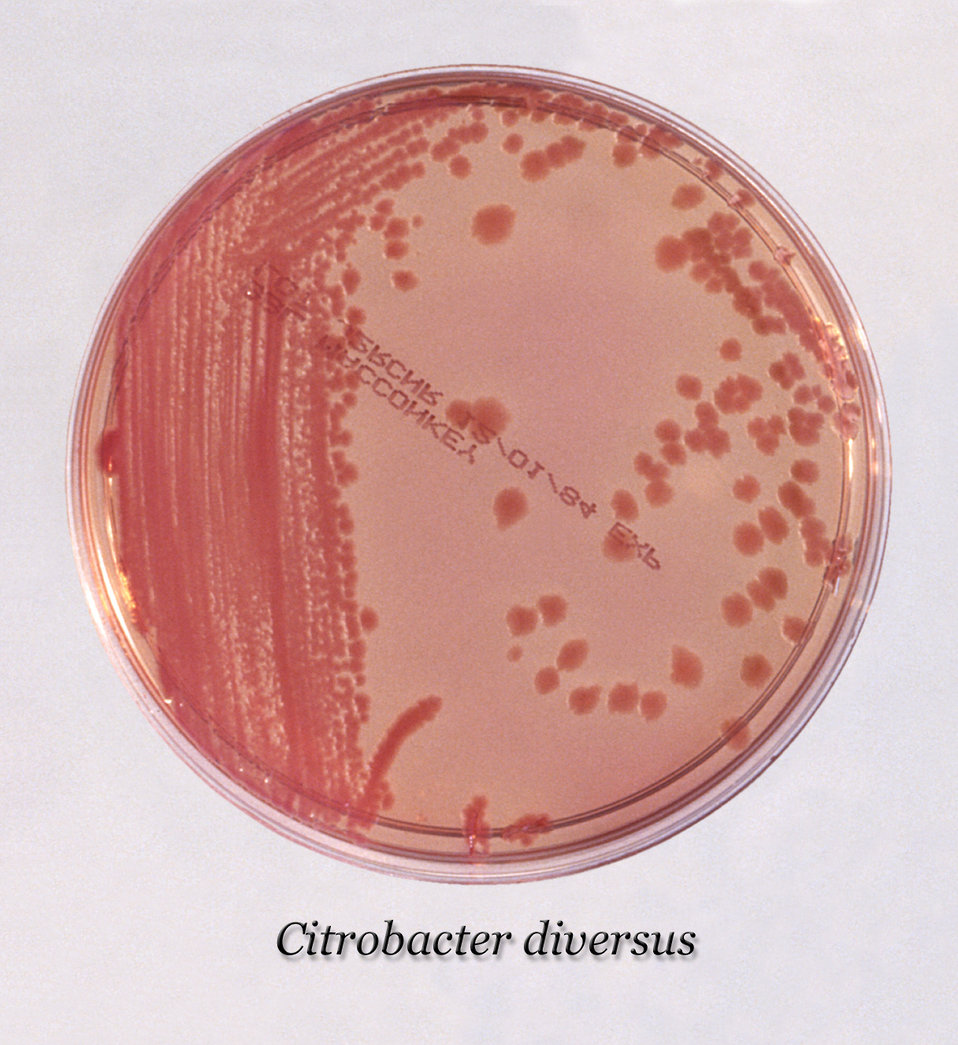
After 24 hours, this inoculated MacConkey agar culture plate cultivated colonial growth of Gram-negative Citrobacter diversus bacteria.